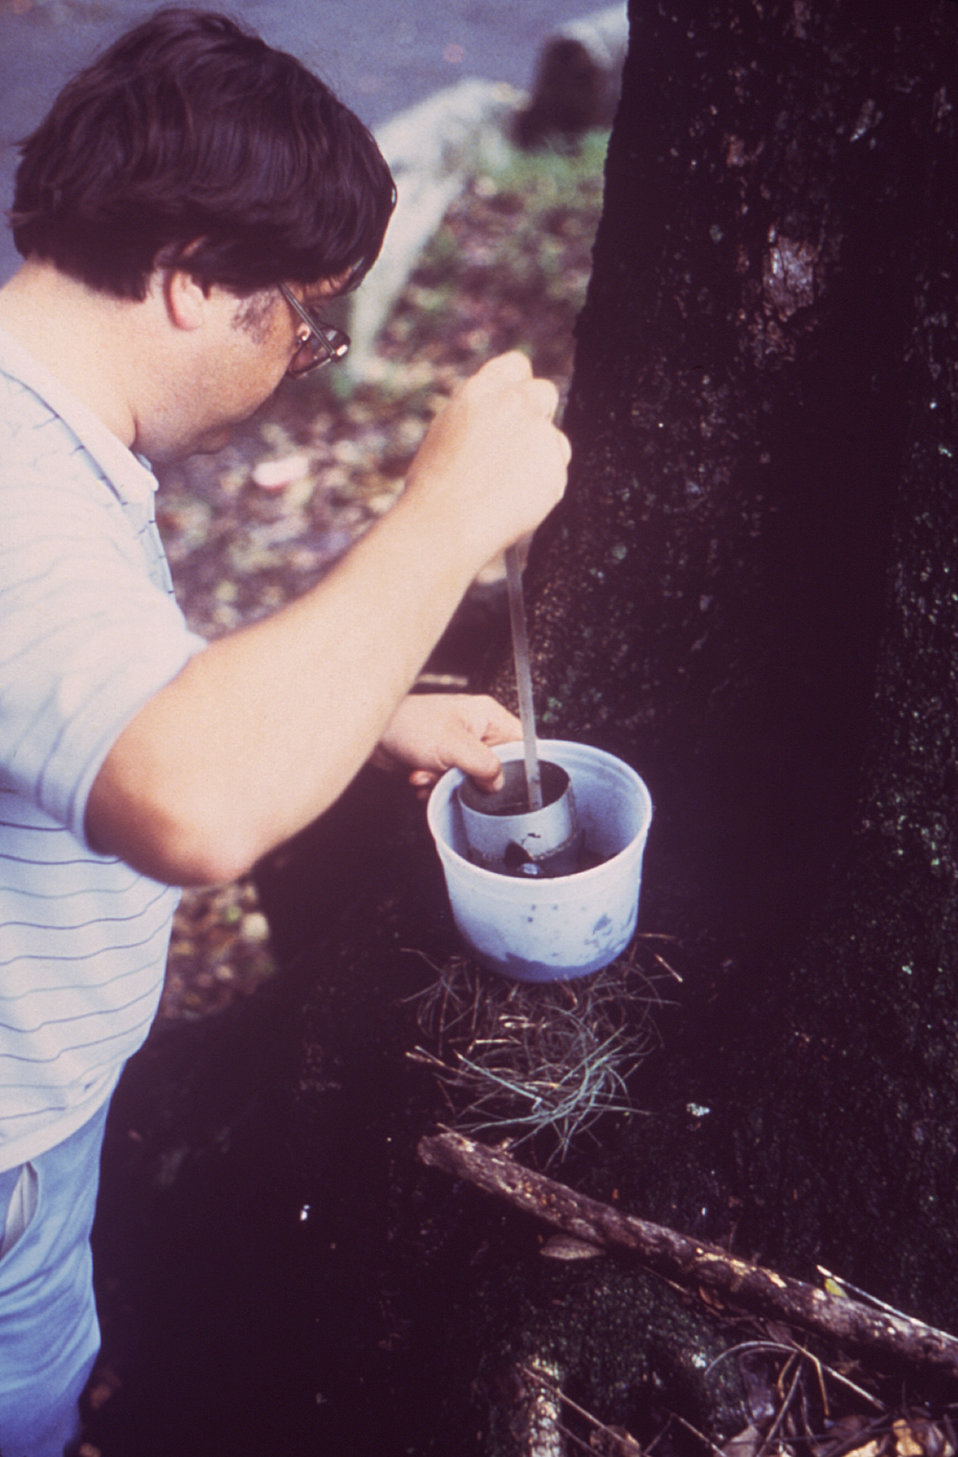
This 1981 photograph depicted an entomologic field technician using a suction pipette in order to trap mosquito larvae in a water sample extracted from a tree hole water collection.